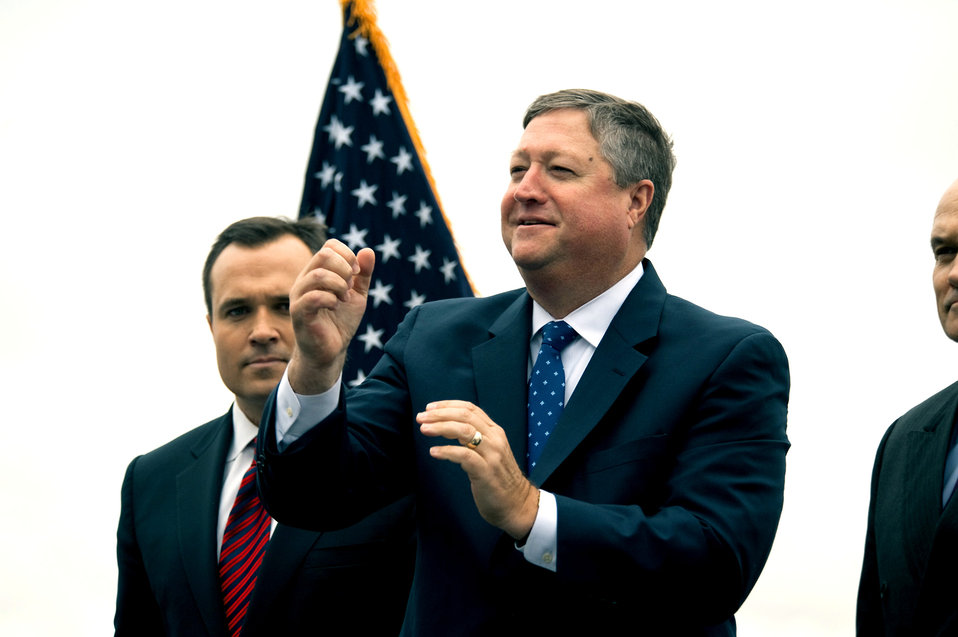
SecAF speaks at AF Week New York City

Secretary of the Air Force Michael Donley sings the Air Force Song and gives an enthusiastic punch in the air during the Air Force Week-New York City proclamation ceremony on the USS Intrepid Sea, Air and Space Museum Aug. 24, 2010. The event was highlighted by a six-ship flyover by the Air Force aerial demonstration team, the Thunderbirds. Also attending was Gen. Raymond Johns, Air Mobility Command commander, New York City Police Commissioner Raymond Kelly and Greg Kelly of